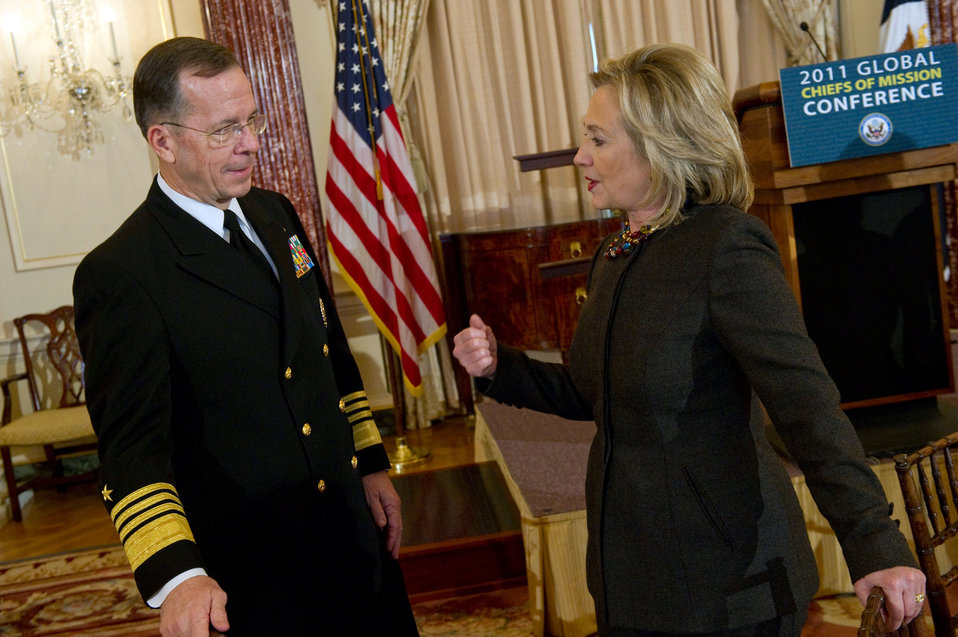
Secretary Clinton Speaks With Admiral Mullen

U.S. Secretary of State Hillary Rodham Clinton speaks with Chairman of the Joint Chiefs of Staff, Admiral Michael Mullen, at the 2011 Global Chiefs of Mission Conference at the U.S. Department of State on February 2, 2011.